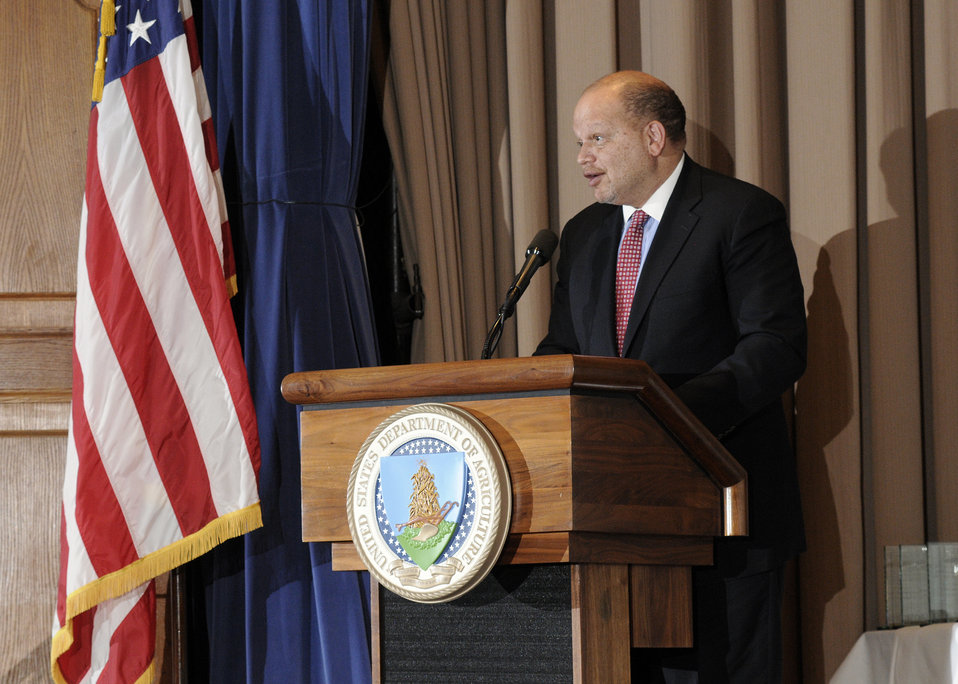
Professor of Law, Columbia University of Law Theodore Shaw is the keynote speaker at the U.S. Department of Agriculture's (USDA) Dr. Martin Luther King, Jr. National Service Day presentation of the Drum Major for Service Awards at the USDA Jefferson Auditorium in Washington, D.C. on Tuesday, Jan. 15, 2013.